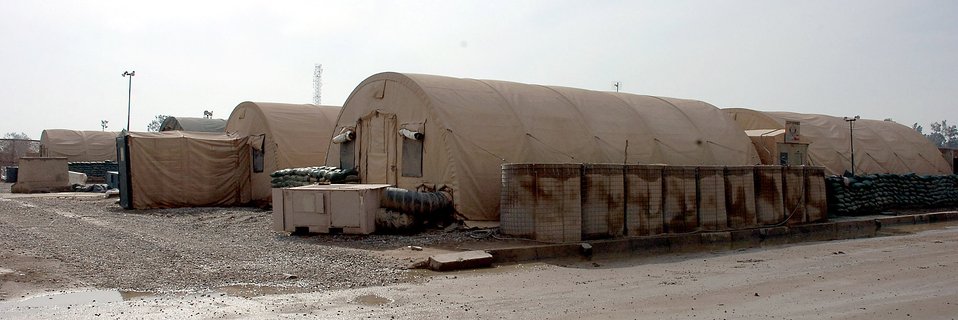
Medics leave dust behind

SATHER AIR BASE, Iraq (AFPN) -- The 447th Expeditionary Medical Squadron recently moved from old temper tents to a new 15,000-square foot modular clinic at Sather Air Base, Baghdad International Air Base, Iraq. The new clinic more than doubles the space available to the deployed medical team that provides primary and emergent medical care to Airmen at the air base and also to Department of Defense contractors, U.S. Army and Marines and Iraqi military forces based at the sprawling Victory Base Complex located at BIAP.